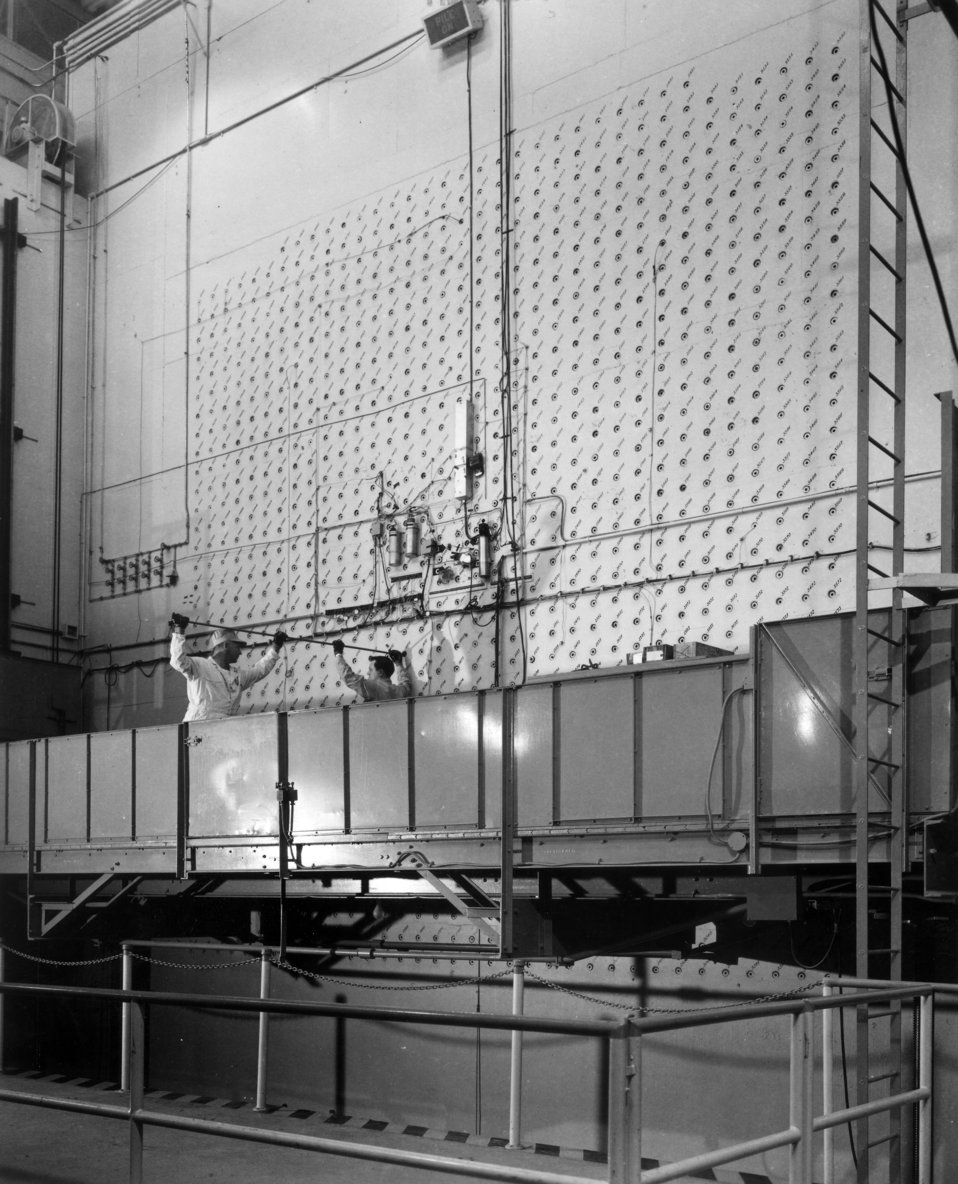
Loading Face Graphite Reactor ORNL

7576-1 DOE photo Ed Westcott
1-2-1952 Oak Ridge Tennessee